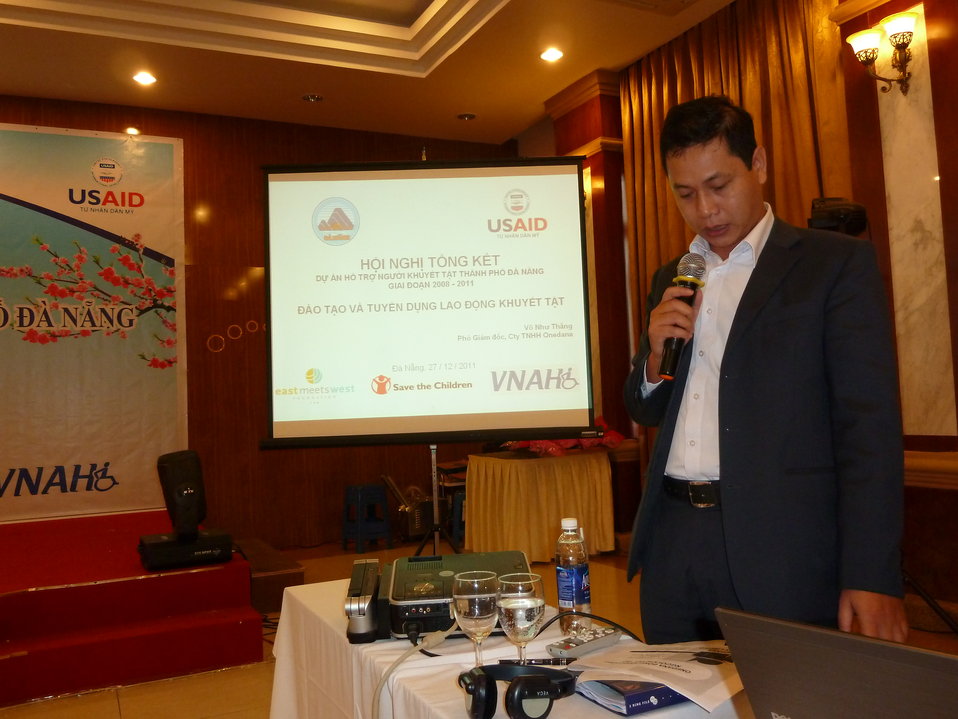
Danang Disability Workshop

Close out workshop of three-year USAID program in disabilities, Danang